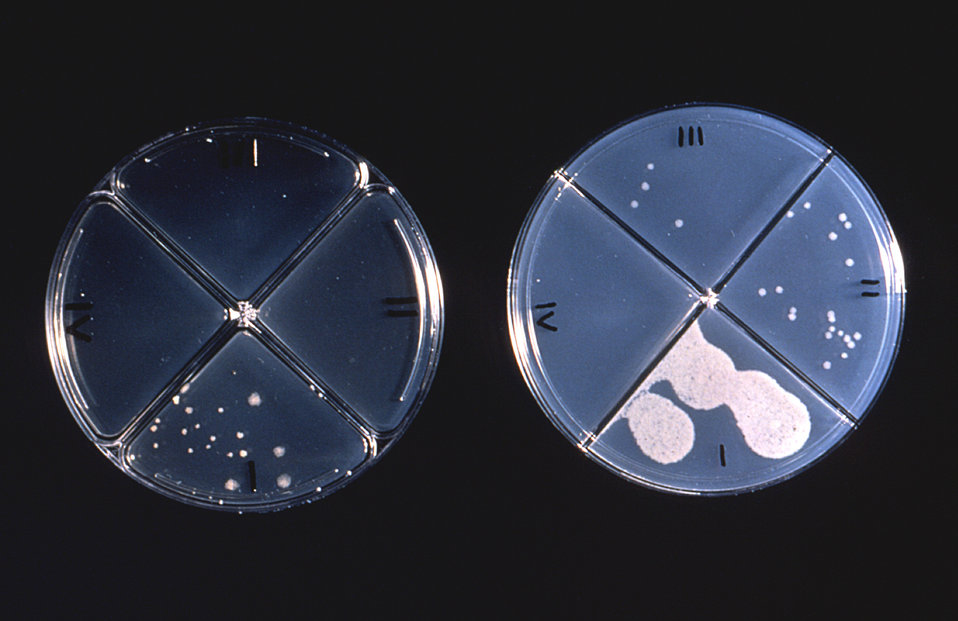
These thin agar culture plates reveal the results of a drug susceptibility test on Mycobacterium tuberculosis bacteria.